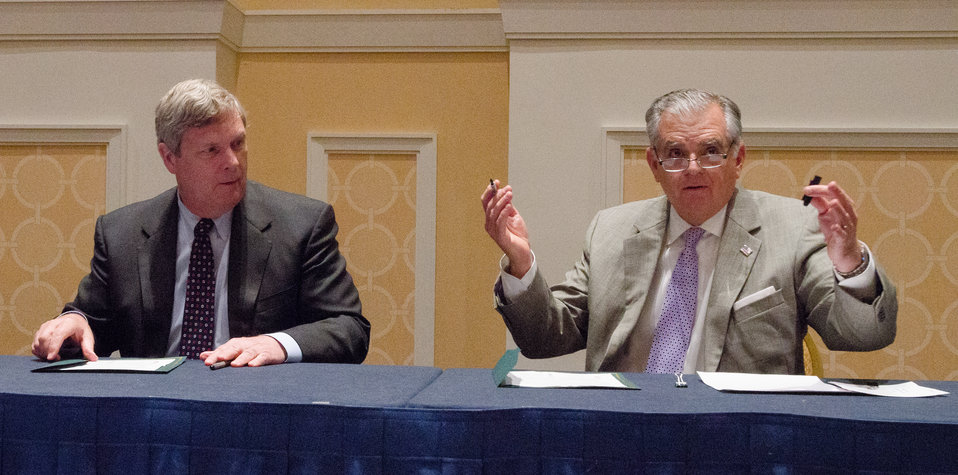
Department of Transportation (DOT) Secretary Ray LaHood, raises his hand after signing the Memorandum of Understanding (MOU) 'FARM to FLY 2.0 -- Working Together Resolution' extending for five years its agreement to work with U.S. Department of Agriculture (USDA), lead by Secretary Tom Vilsack (left), and and other partners to help develop a viable biofuel for the aviation industry. The MOU was signed at the Advanced Biofuels Leadership Conference at Gaylord National Harbor in Maryland, Monday, April 15, 2013.